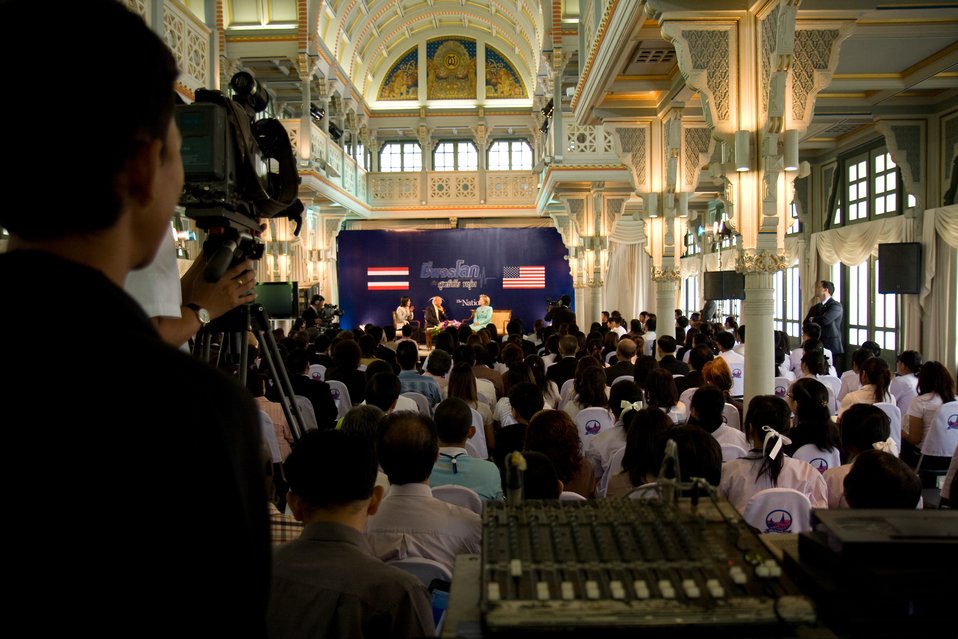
Secretary Clinton Interviews With the Nation Group

More than 200 people including students, young leaders, government officials, and civil society were in the audience during the taping of an interview with U.S. Secretary of State Hillary Rodham Clinton at Phyathai Palace in Bangkok, Thailand July 22, 2009.